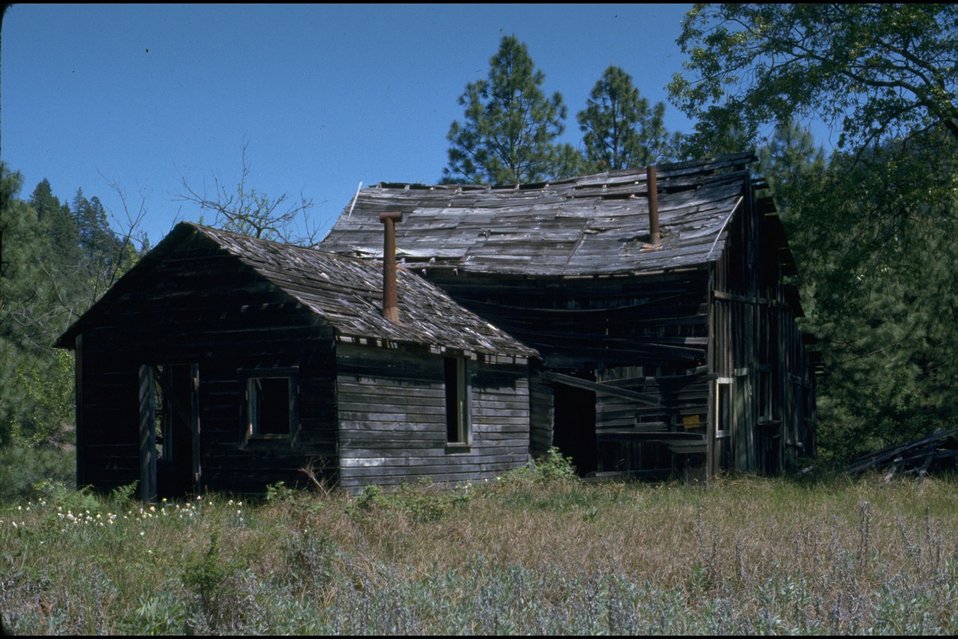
Rogue River - Hellgate Recreation Area. Old Farm House (Dean Placer?).